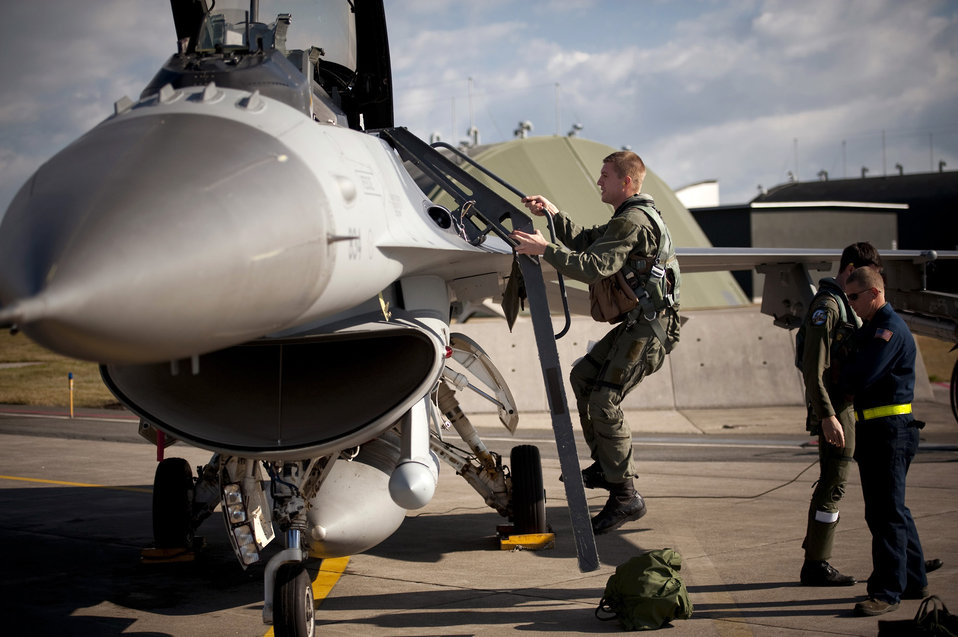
Misawa Airmen earns flight of his life

Staff Sgt. Bernard Mutz climbs into the back seat of an F-16 Fighting Falcon at Misawa Air Base, Japan, Oct. 22, 2010. Sergeant Mutz is a readiness and emergency manager with the 35th Civil Engineer Squadron, and earned the flight for his outstanding service as part of the 35th Fighter Wing’s incentive flight program.